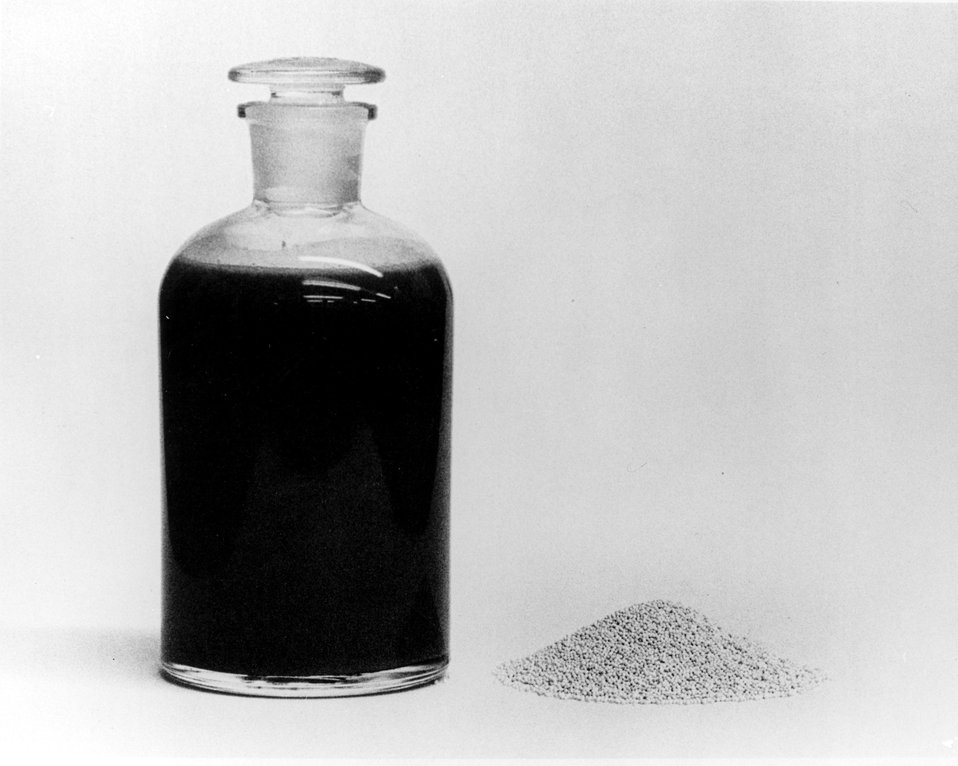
Solidification of Wastes...One method of solidifying liquid high-level radioactive waste is to send it through a waste calcining process that converts the liquid into a granular form pictured here. Circa 1972.